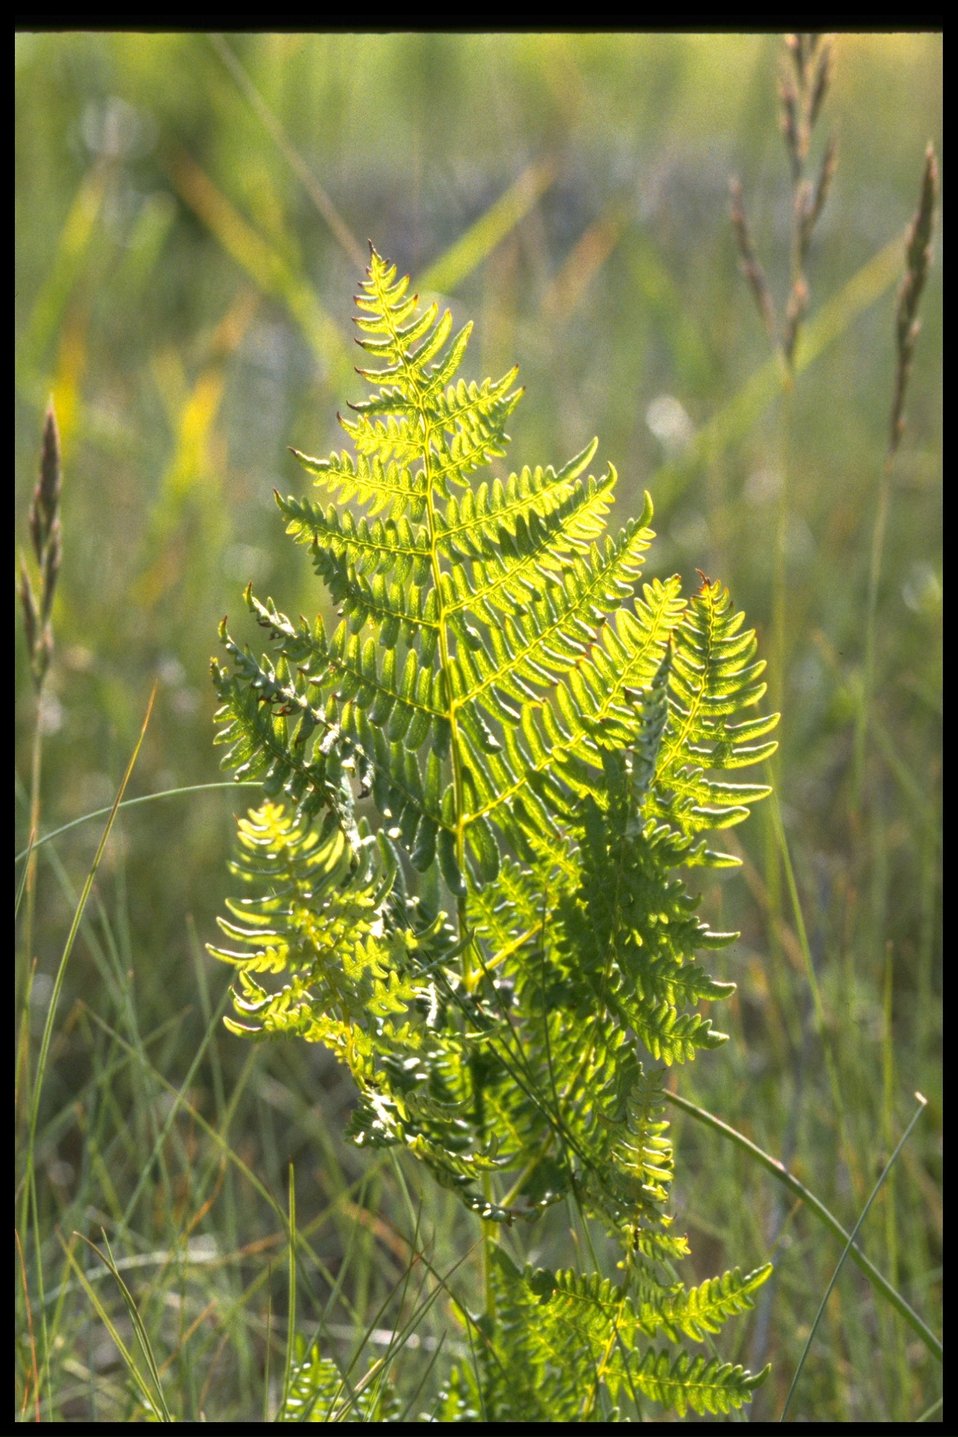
A fern at Point Colville.